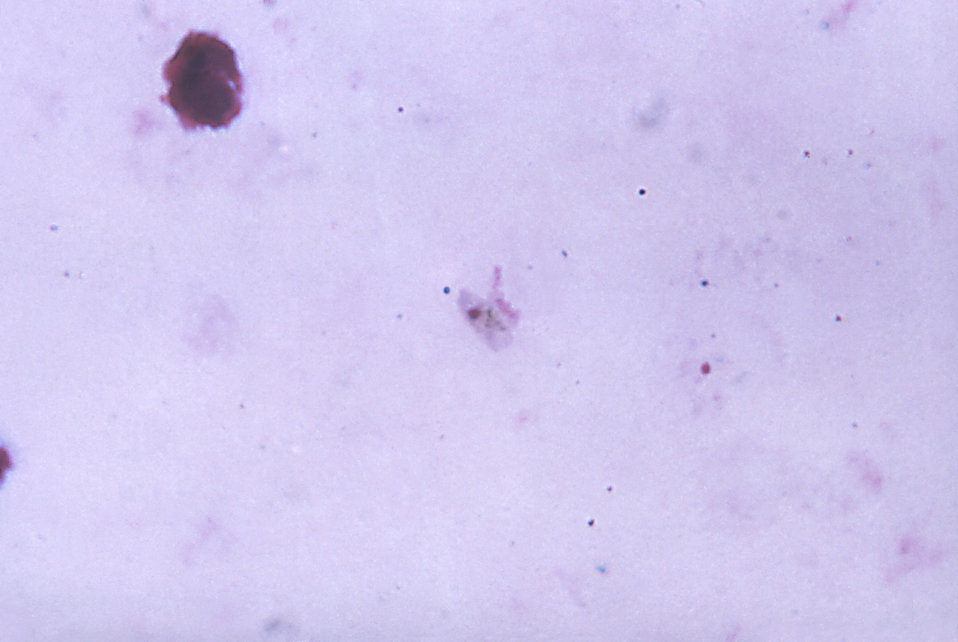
This thick film micrograph revealed an elongated, lightly pink-stained Plasmodium falciparum gametocyte.